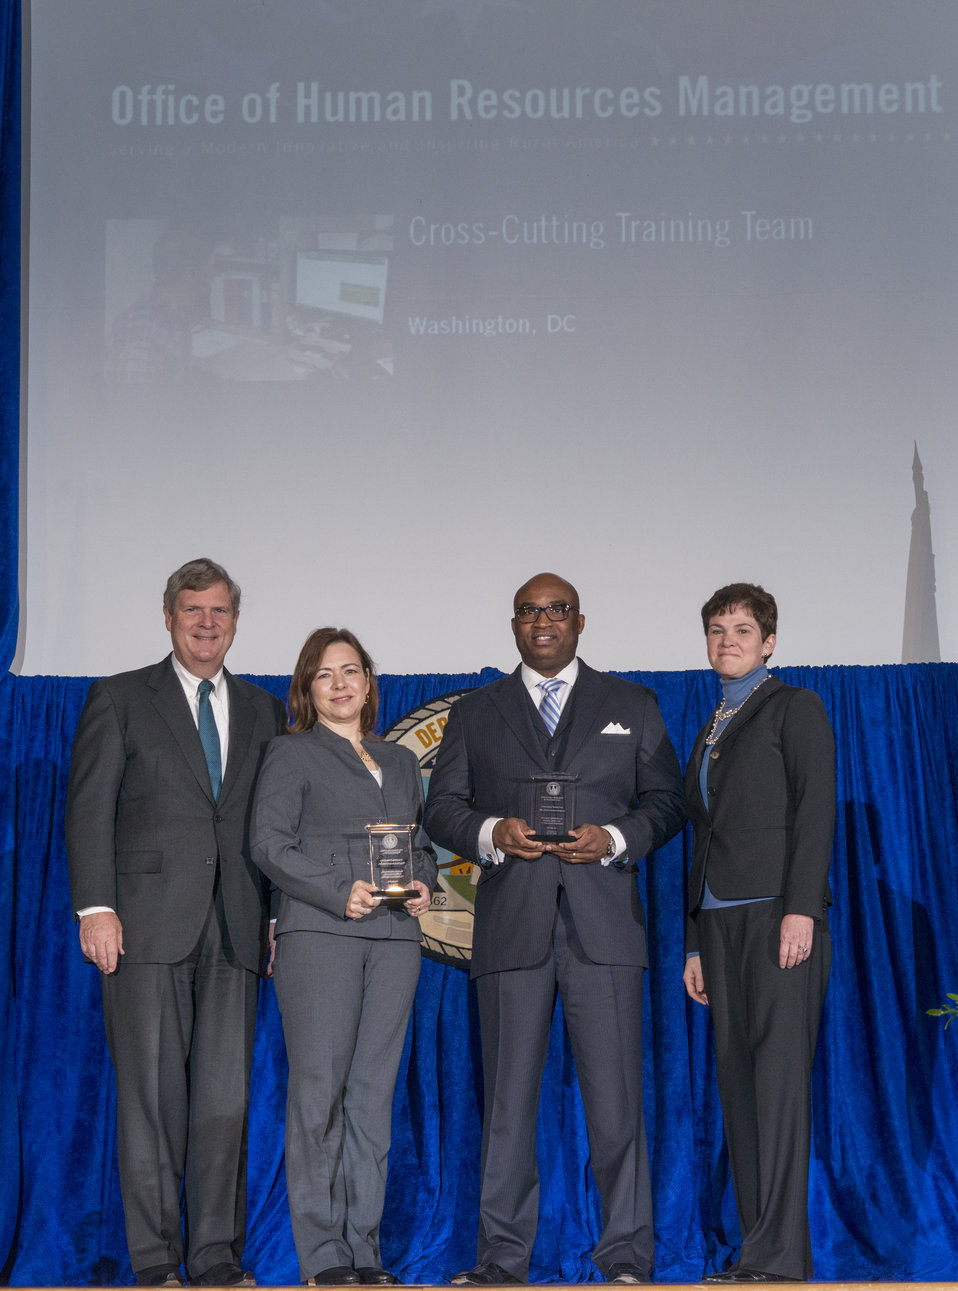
Agriculture Secretary Tom Vilsack and Agriculture Deputy Secretary Krysta Harden present the Secretary’s Honor Award to the Cross-Cutting Training Team, Office of Human Resources Management, in Washington, D.C. Group leaders Zina Sutch, Ph.D. and Farm Service Agency (FSA) Robert Haughton for furthering U.S. Department of Agriculture (USDA) as an inclusive, high-performance organization by driving cross-agency collaboration through training to improve outreach and customer service at the 2013 Honor Awards in the Jefferson Auditorium at USDA in Washington, D.C. on Wednesday, Dec. 11, 2013.